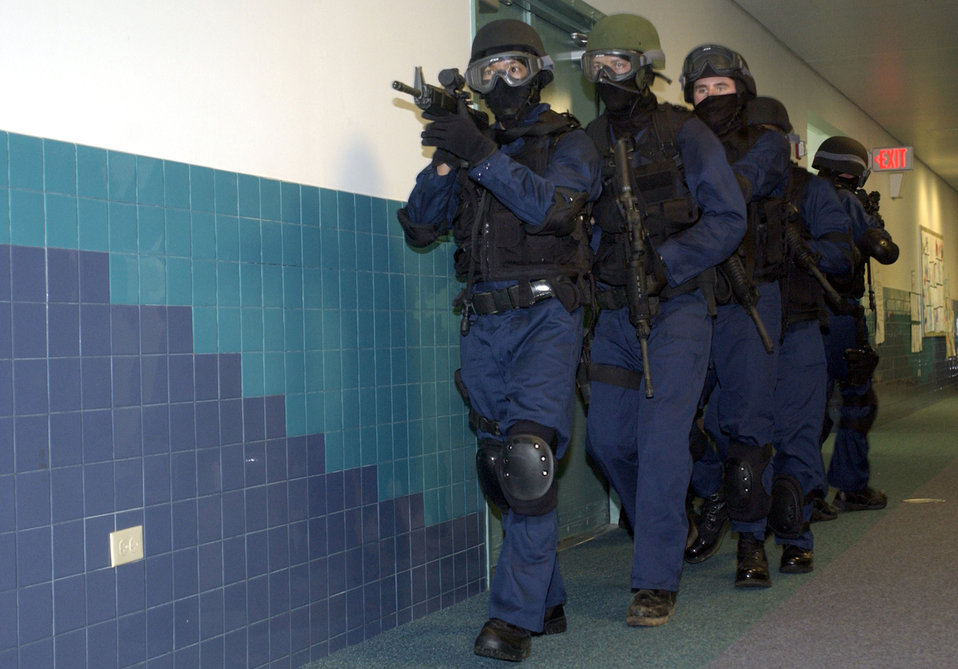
Hostage negotiation exercise

During a hostage negotiation exercise, the 36th Security Forces Squadron's High Intensity Tactical Team prepares to breech a classroom where an upset parent has taken four students and a teacher captive Wednesday, Feb. 22, 2006, at Anderson Air Force Base, Guam.